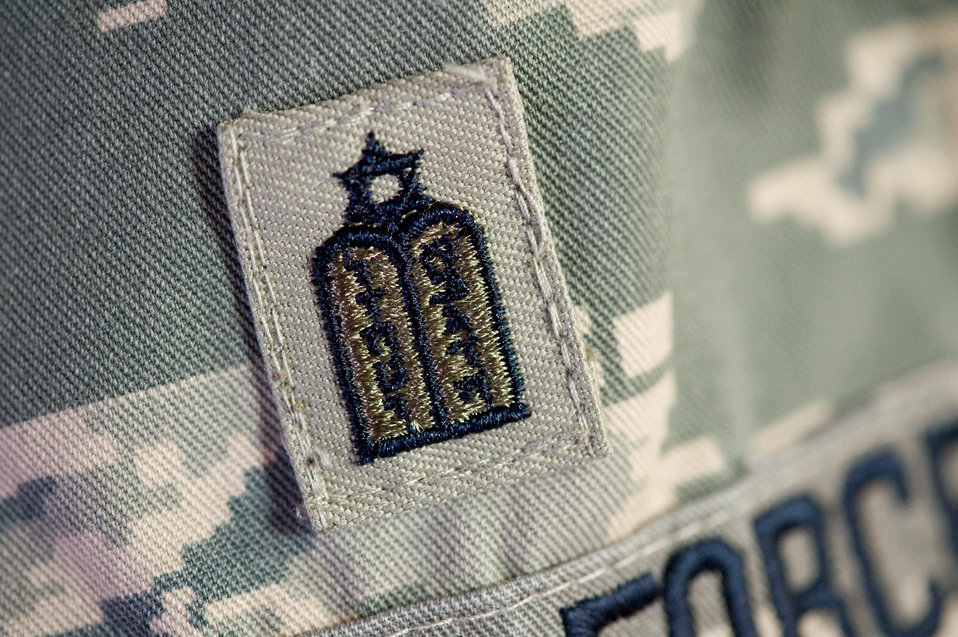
U.S. Air Force Chaplaincy

The Jewish chaplain badge embroidered with the ten-commandments, Hebrew lettering and the Jewish star on top is worn by U.S. Air Force Rabbi, Chaplain, Captain Sarah D. Schechter who leaded the evening le'il shabbat service on Friday, Sept. 4, 2009 at Lackland Air Force Base's Airmen Memorial Chapel. The more than 25 basic military trainees and other attendees participated in a religious education class, then Ma'ariv prayer service for the setting of the sun, followed by a meal provided by lay leaders supporting the service. Because of training schedules some ceremonies and events are earlier than traditionally held. By order of commanders, those who want to attend any or all religious services of their choosing are given full permission and opportunity to do so. Chaplain, Captain Schechter is an Operation Iraqi Freedom veteran and considers her deployment there to be one of the highlights of her career. Schechter is the first woman rabbi in the U.S. Air Force.